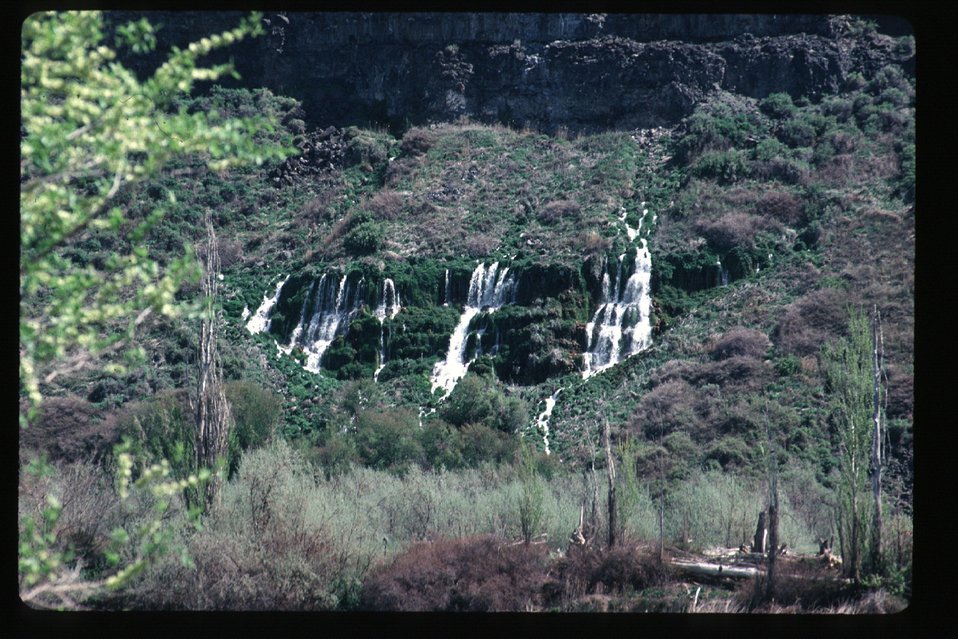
One Thousand Springs Scenic USRD Upper Snake River District